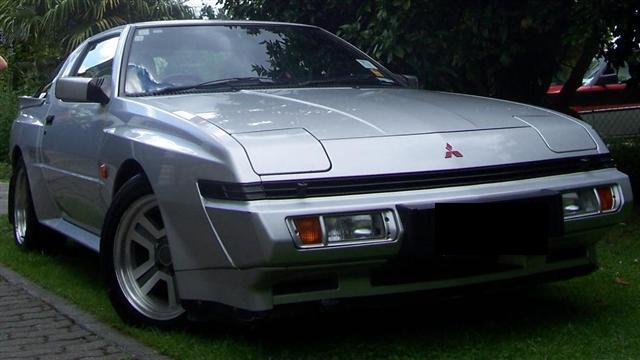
Taken by me (Masty). This is my sexy car.